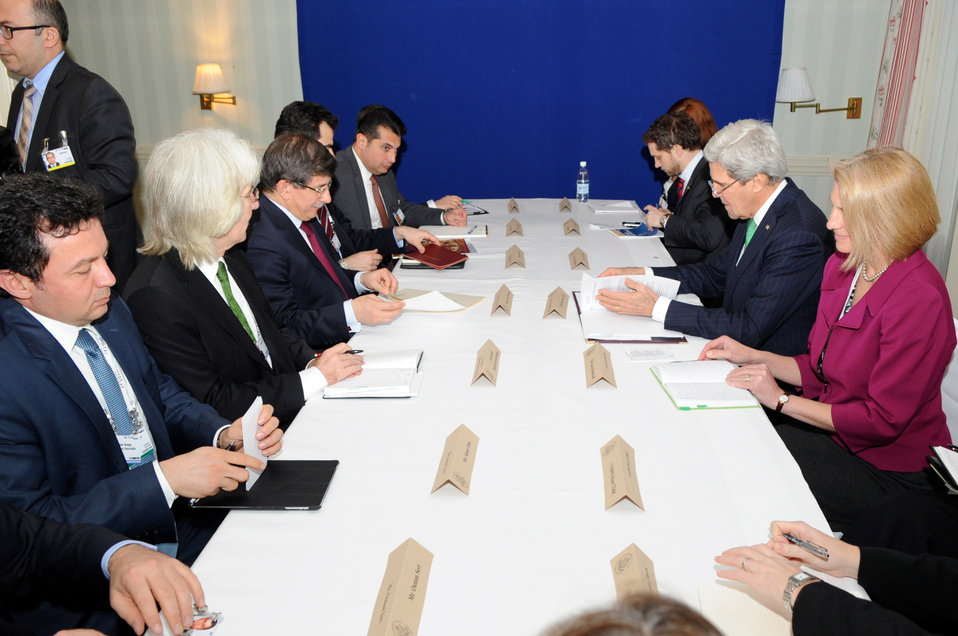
Secretary Kerry Meets With Turkish Foreign Minister Davutoglu at Munich Security Conference

U.S. Secretary of State John Kerry, Turkish Foreign Minister Ahmet Davutoglu, and their respective teams sit down for a bilateral meeting on the margins of the Munich Security Conference in Munich, Germany, on February 1, 2014.